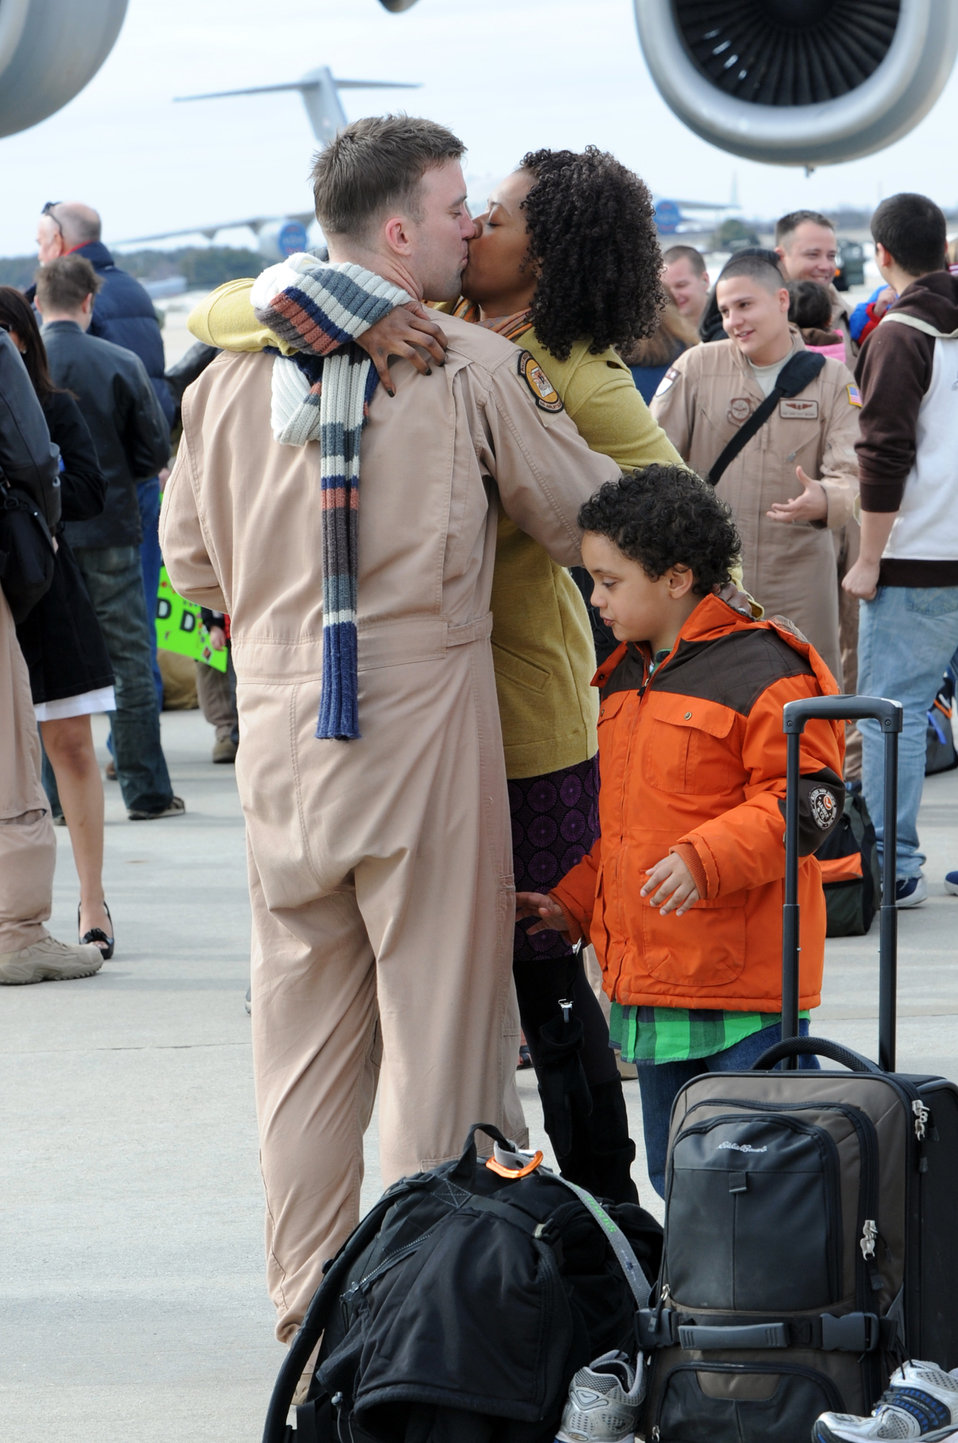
McGuire Airmen return from deployment

Staff Sgt. Donald Jones is greeted by his wife, Taccora Jones, and son, Caleb Jones, after arriving home March 2, 2010, at Joint Base McGuire-Dix-Lakehurst, N.J. The squadron assumed the role and mission of the 817th Expeditionary Airlift Squadron when they deployed in October 2009 in support of operations Iraqi Freedom and Enduring Freedom. Sergeant Jones is a 6th Airlift Squadron loadmaster.